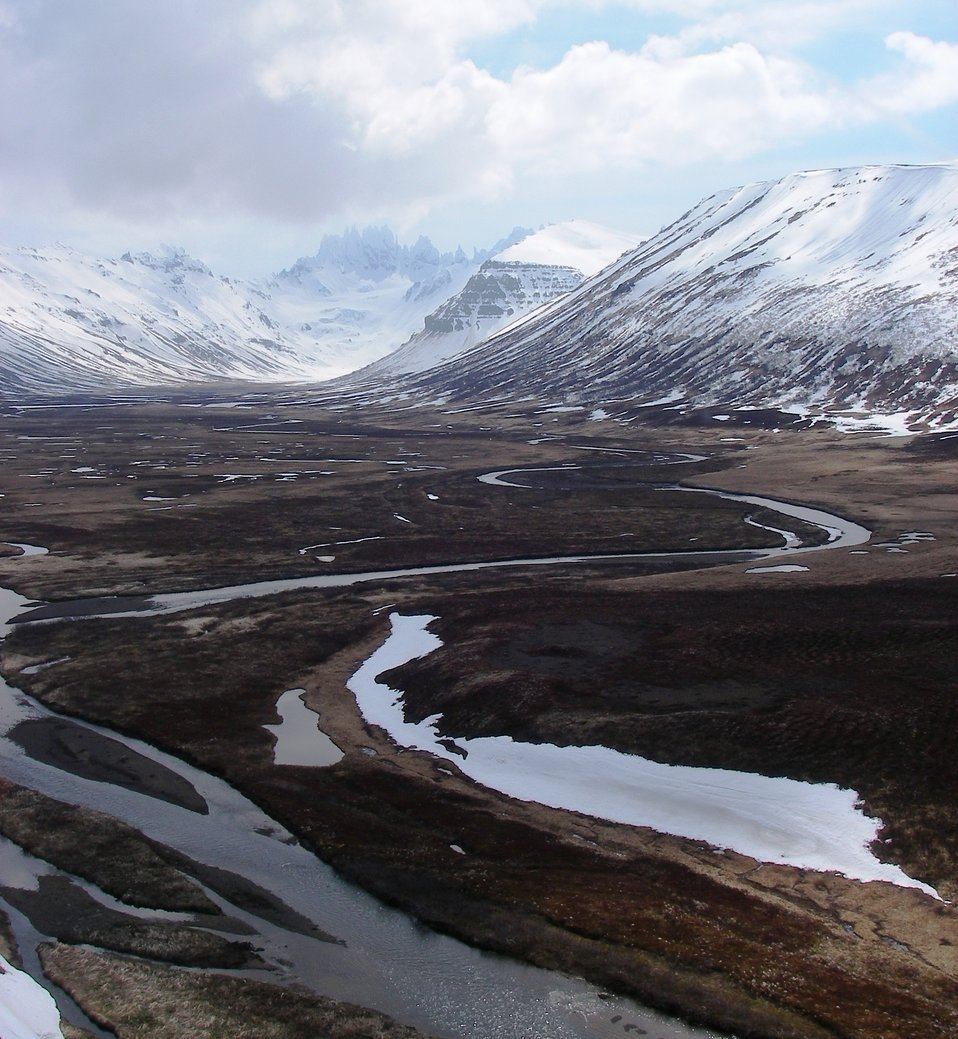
Izembek Wilderness

Joshua Green area, Izembek Wilderness, Izembek National Wildlife Refuge
Photo by Kristine Sowl,
USFWS, Public Domain